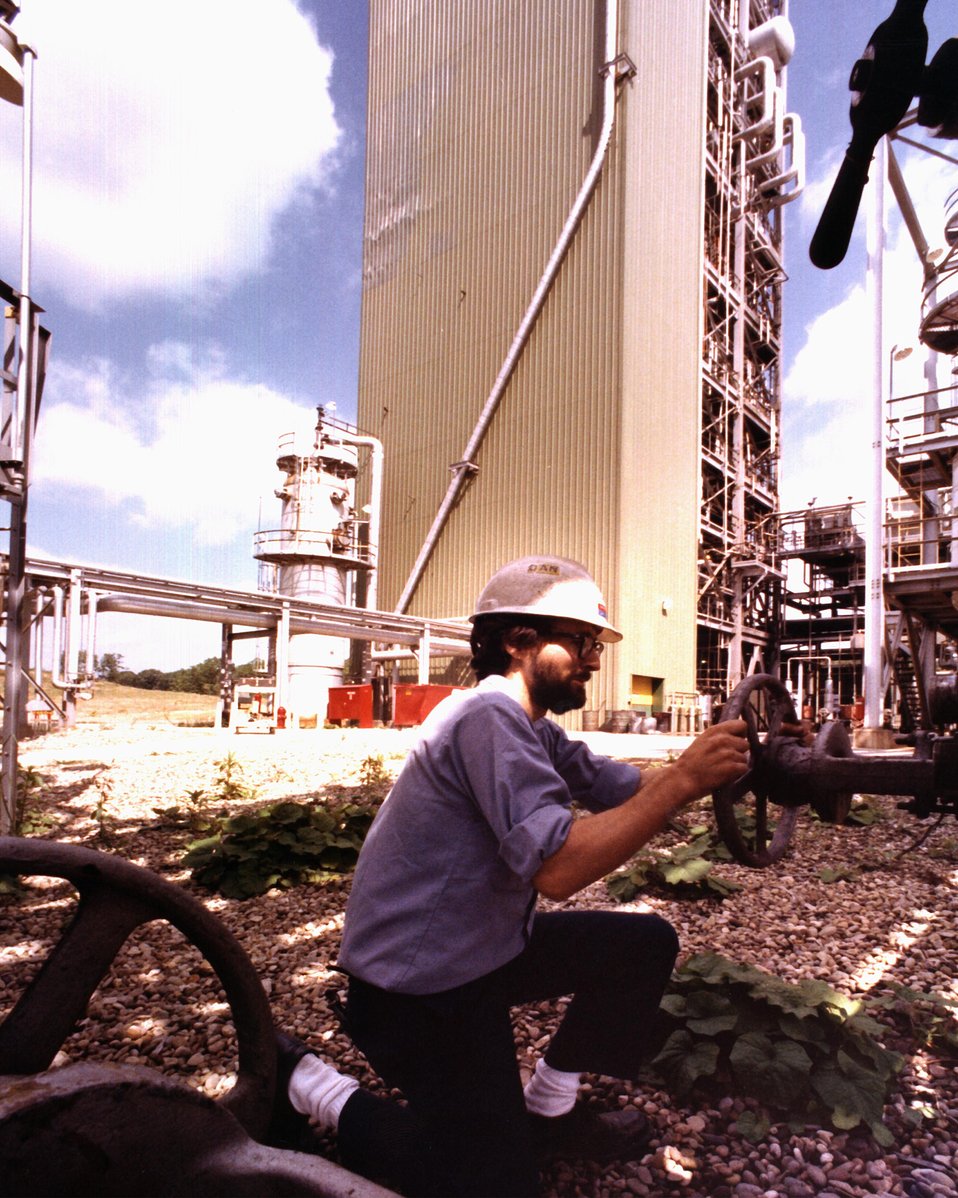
BIGAS WORKER ADJUSTING VALVE, THE GASIFIER TOWER IS IN THE BACKGROUND.

THE BIGAS PILOT PLANT HAS A TWO-STAGE, ENTRAINED-BED GAS- IFIER. IN THIS GASIFIER, PULVERIZED COAL IS CONVERTED TO METHANE-RICH GAS BY REACTING THE COAL WITH STEAM AND OXYGEN UNDER HIGH PRESSURE. THE METHANE-RICH GAS IS PROCESSED TO REMOVE THE HYDROGEN SULFIDE AND CARBON DIOXIDE WHICH LEAVES THE HIGH BTU GAS. THE BIGAS REACTOR CAN HANDLE ALL TYPES OF COAL. DUE TO THE HIGH OPERATING TEMPERATURE OF OVER 2500 DEGREES F., THERE IS NO TAR IN THE PRODUCT GAS, THUS SIMPLIFYING THE GAS CLEANUP STEP. HIGH METHANE YIELDS ARE ACHIEVED WITHOUT METHANATION, AND COALS CAN BE GASIFIED WITHOUT PRIOR TREATMENT BECAUSE THE PROCESS USES AN ENTRAINED-BED RATHER THAN A FIXED-BED OR FLUIDIZED-BED SYSTEM.